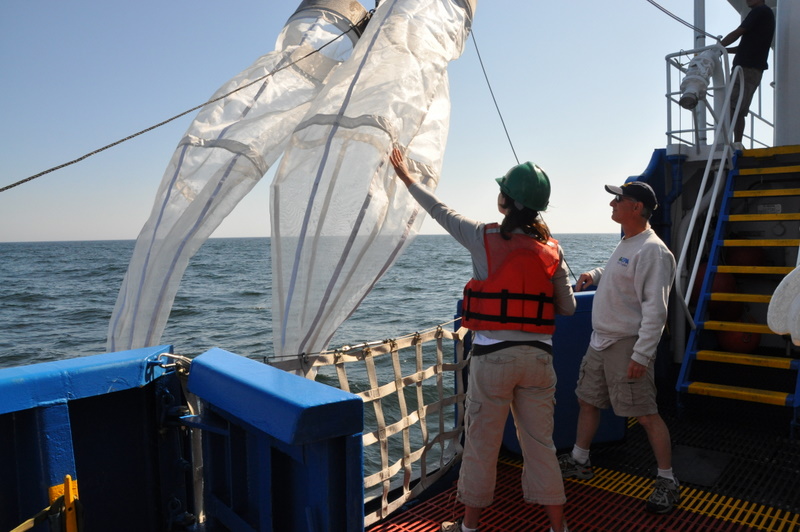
August 2009, Sending out the plankton tow nets

In this photo EPA scientist Regina Lyons, EPA Chief Scientist Matt Liebman.